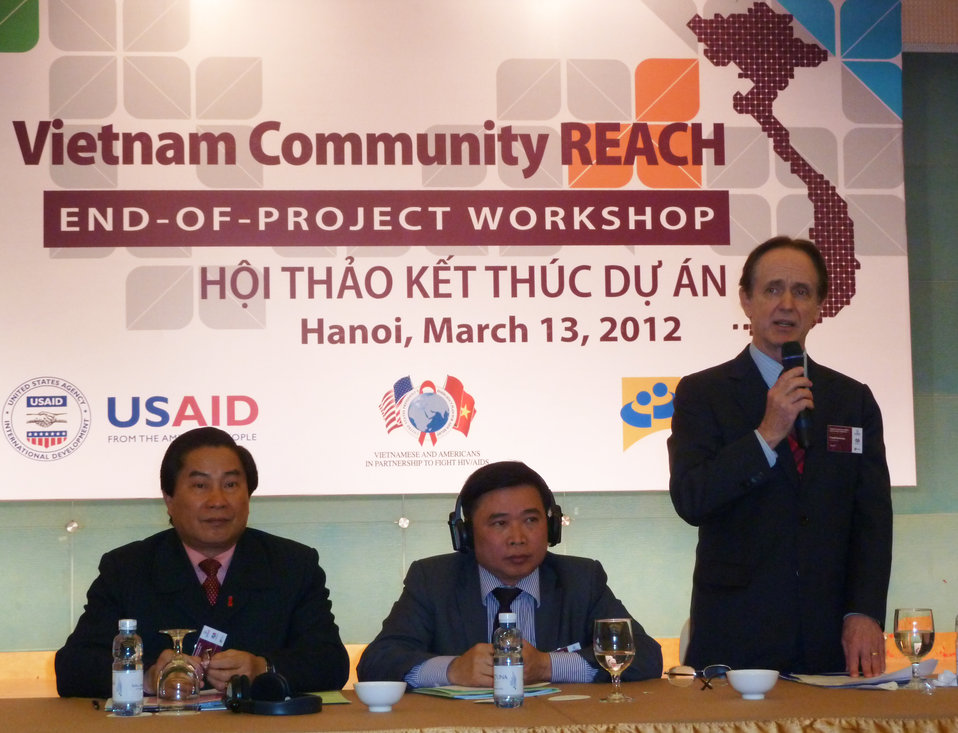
USAID Mission Director Francis Donovan addresses participants at the Community REACH project workshop

Community REACH project close-out with USAID and implementing partner, Pact